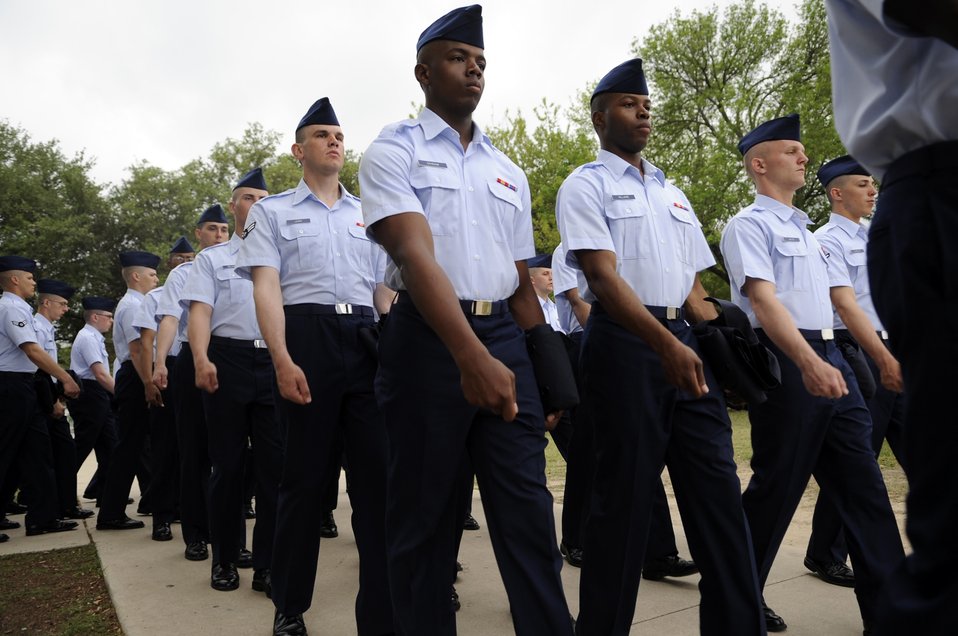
From basic trainee to Airman

Basic trainees march to the parade grounds at Lackland Air Force Base, Texas, April 24 for their graduation ceremony.